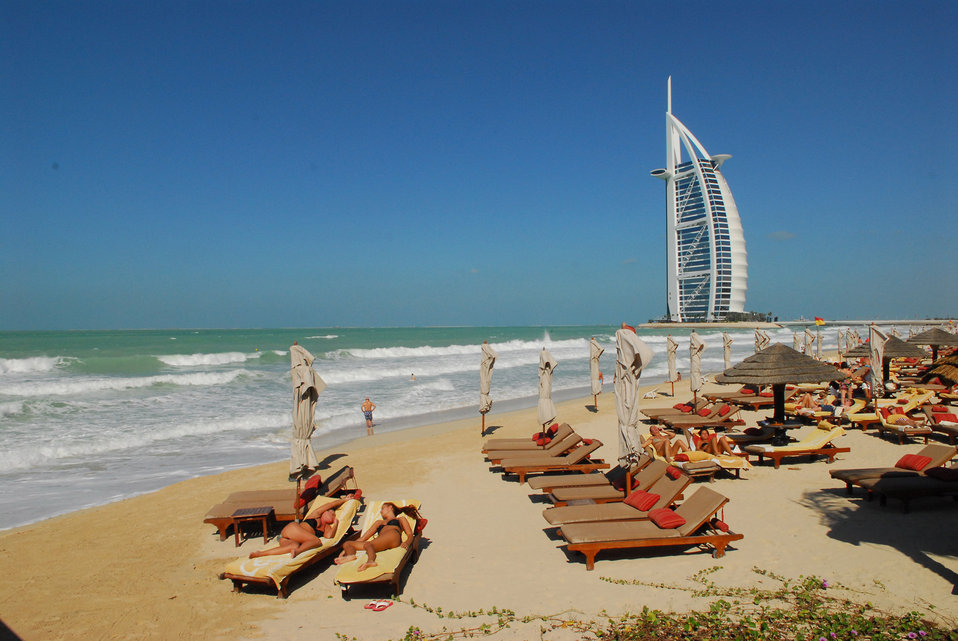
Burj al arab in dubai

Burj al arab.